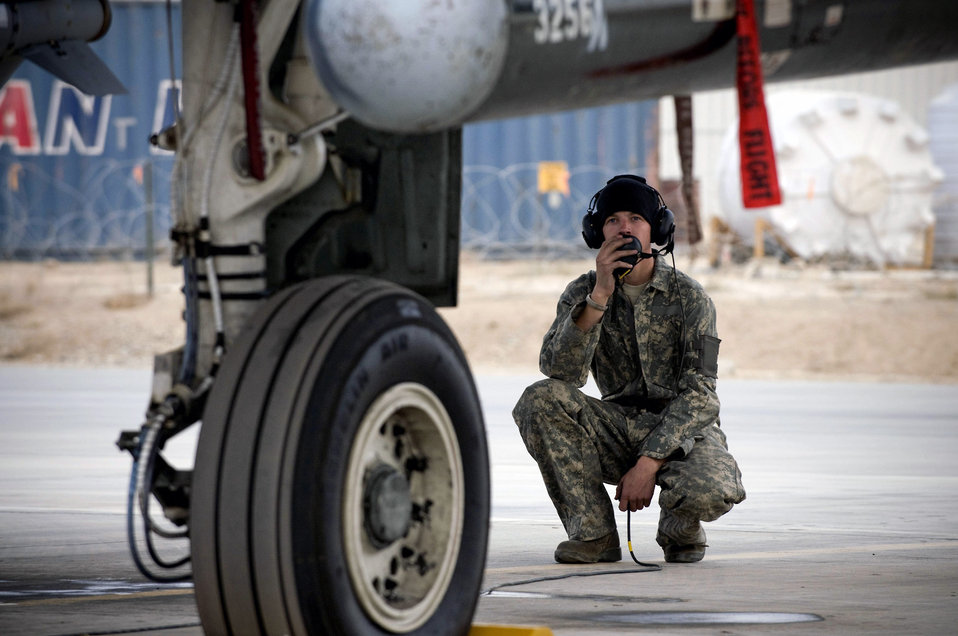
Thunderbolts active during the holidays

Airman 1st Class Michael Ward talks to the pilot of an A-10 Thunderbolt II during engine startup Dec. 2 at Bagram Airfield, Afghanistan. Airman Ward helps the pilot by acting as his eyes and ears outside the aircraft to make sure everything is working properly. Airman Ward is an A-10 crew chief deployed from Moody Air Force Base, Ga. He hails from Cincinnati.